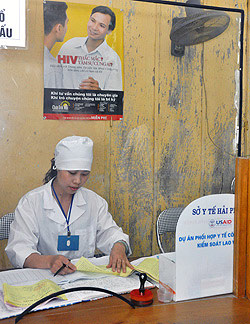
Pharmacies take part in TB referral services with the support of a USAID program